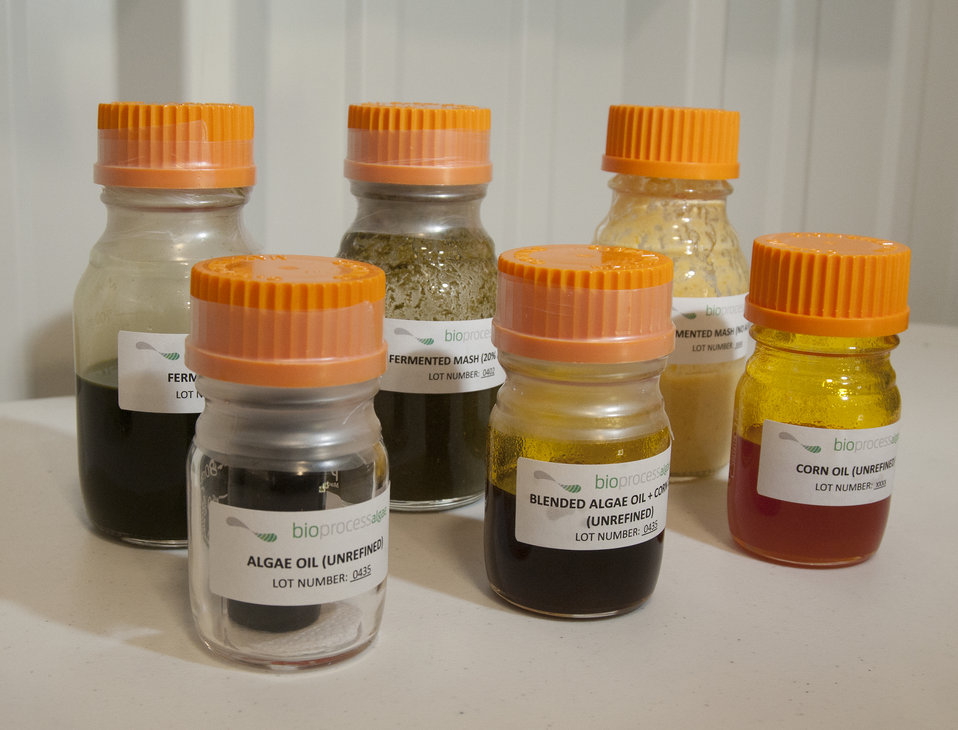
These are samples of biofuels produced from algae. Algae are another source as a sustainable feedstock for biofuels in several ways. The energy-dense oil fraction can be extracted and converted as a replacement for biodiesel and as a substitute for crude oil at the front end of a refinery. Algae are also a potential feedstock for the traditional fermentation process in the production of fuel ethanol. Agriculture Secretary Tom Vilsack toured the BioProcess Algae facility at Green Plains Renewable Energy (GPRE), Inc. on Friday, Apr. 5, 2011 in Shenandoah, IA.